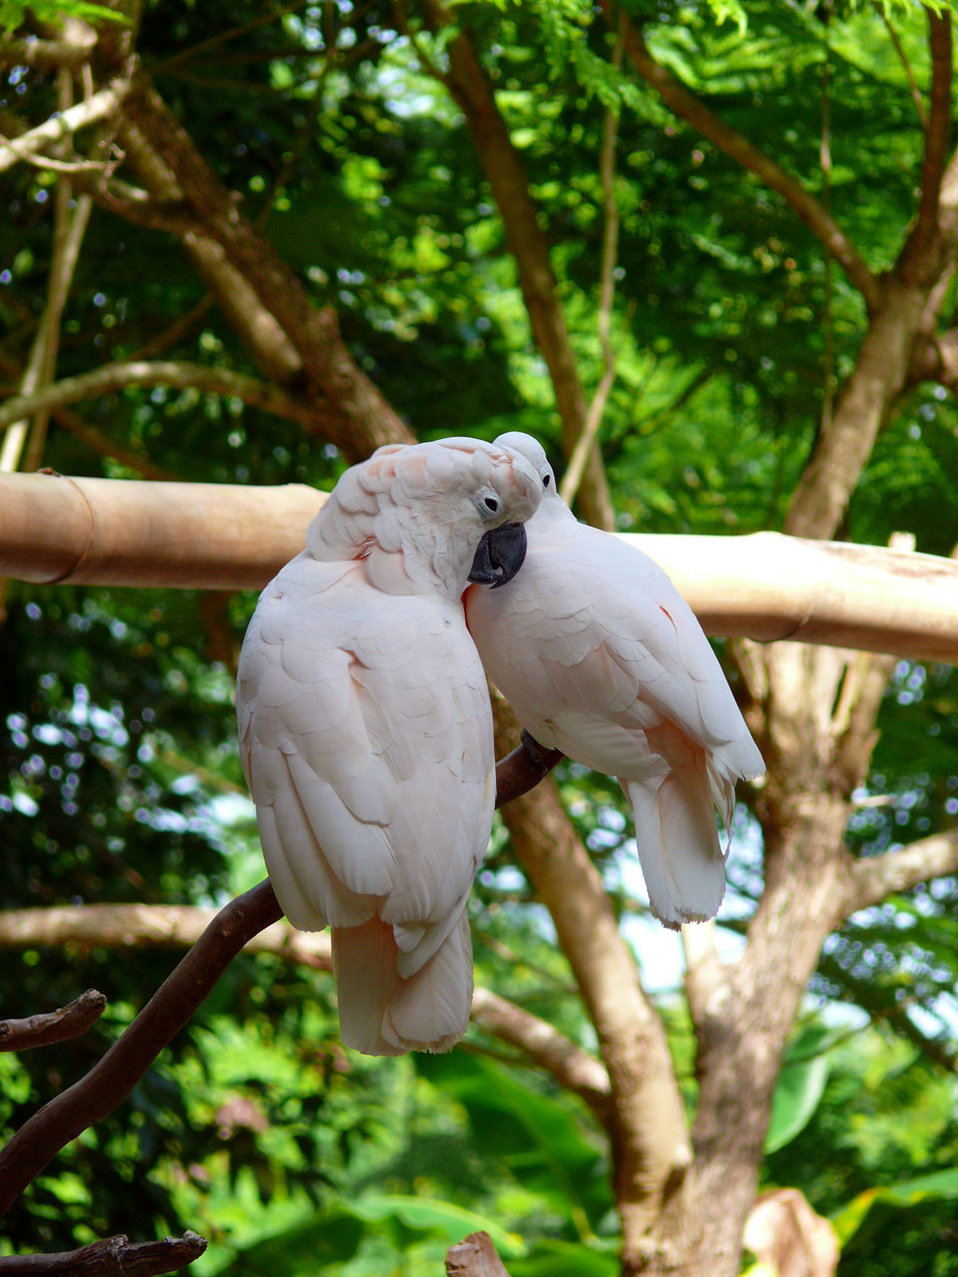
Birds in natural environment.